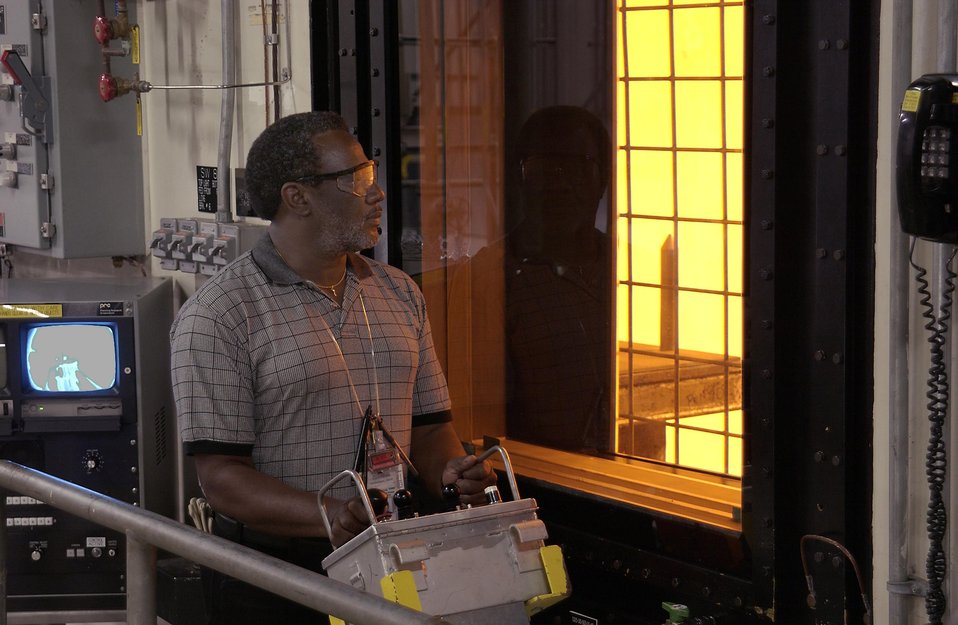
CLOSE UP OF EMPLOYEE AND REMOTE OPERATIONS AT THE SRS DEFENSE WASTE PROCESSING FACILITY.

THE DWPF IS DESIGNED TO CONVERT HIGH LEVEL LIQUID DEFENSE NUCLEAR WASTE INTO BOROSILICATE GLASS, A STABLE FORM SUITABLE FOR STORAGE, TRANSPORTATION AND REPOSITORY STORAGE. THE WASTE TO GLASS PROCESS IS KNOWN AS VITRIFICATION. THE RADIOACTIVE WASTE IS FUSED WITH SAND AT A TEMPERATURE OF 2,000 DEGREES IN A LARGE CRANE OPERATED STEEL MIXER, POURED INTO STAINLESS STEEL CANISTERS TO HARDEN INTO A BLACK GLASS. THE SEALED CANISTERS ARE STORED VERTICALLY IN SLOTS ON A CONCRETE SLAB UNTIL THEY CAN BE MOVED TO A SAFE REPOSITORY.